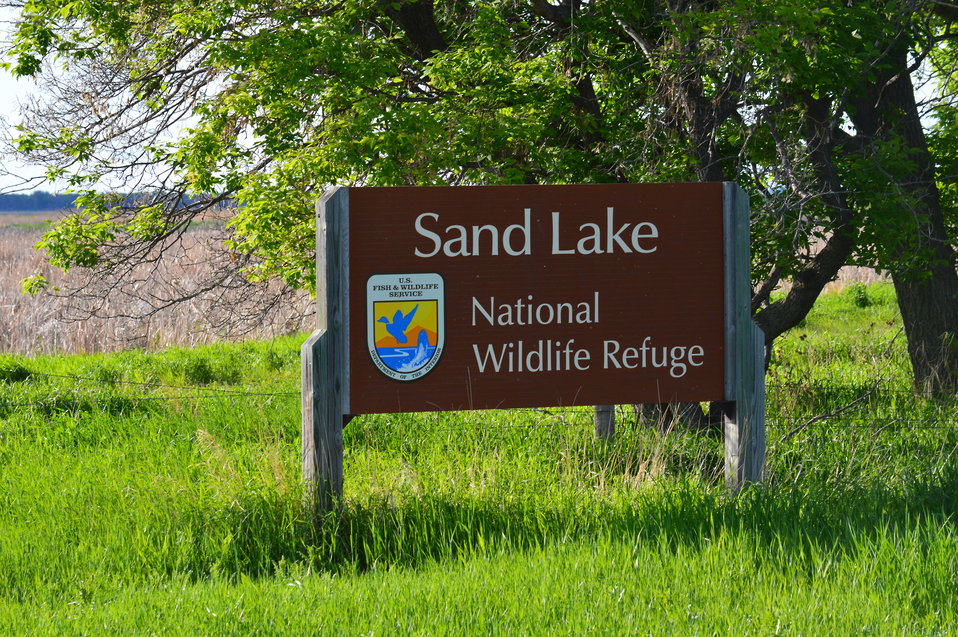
Sand Lake NWR sign

Scenery and wildlife at Sand Lake National Wildlife Refuge in South Dakota